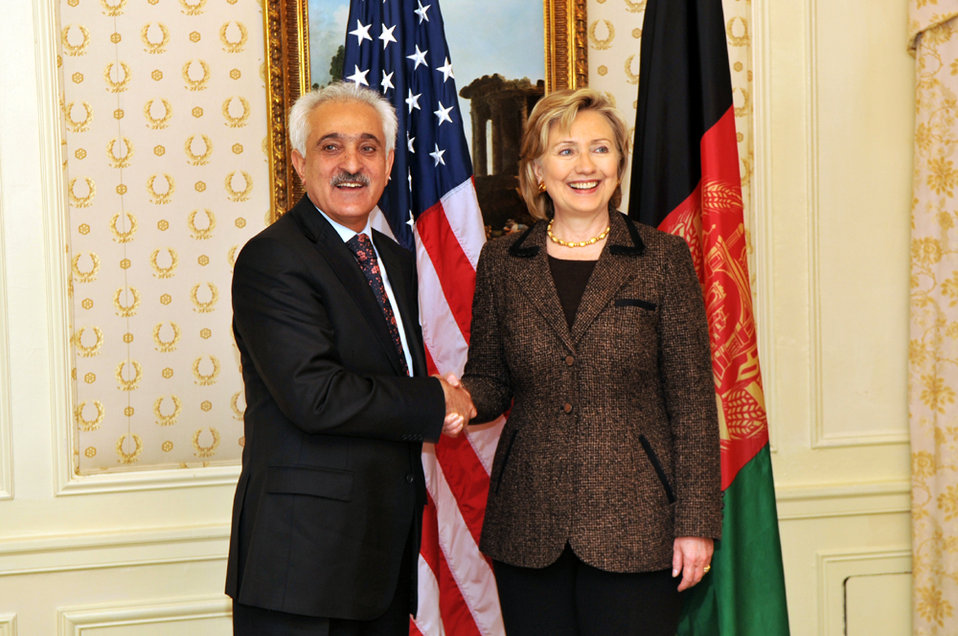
UNGA 2009: Secretary Clinton Meets With Afghan Foreign Minister

U.S. Secretary of State Hillary Rodham Clinton meets with Afghan Foreign Minister Rangin Dadfar Spanta at the Waldorf Astoria hotel in New York City, New York September 28, 2009.